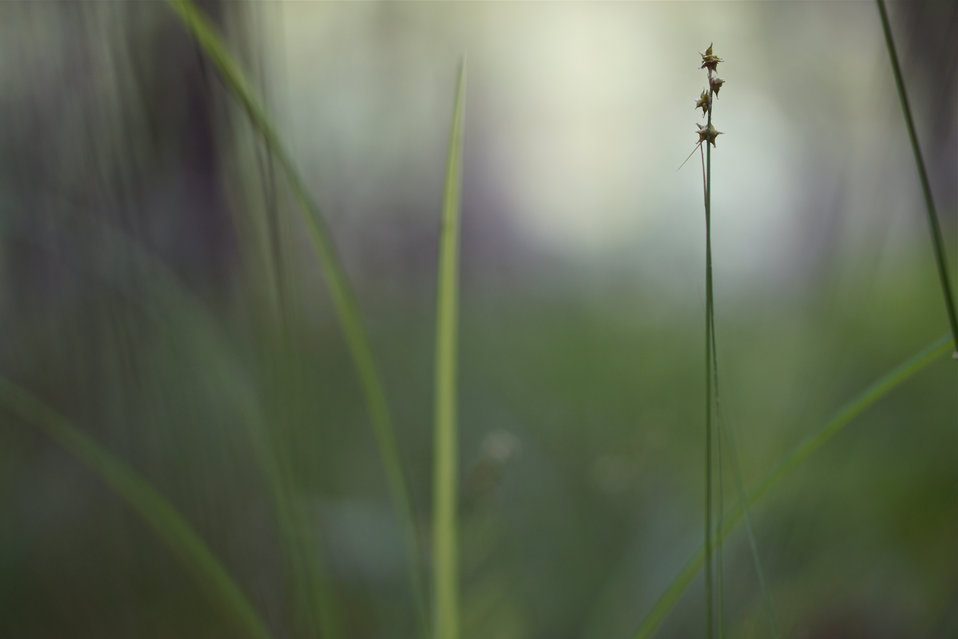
Lone sedge seedhead

In May, bog conservationists from Tennessee, North Carolina, and Georgia convened in the north Georgia mountains for the spring, 2014 meeting of the Bog Learning Network. The event provided an opportunity for biologists to see, first hand, the result of management efforts at two north Georgia bogs. More importantly, the outings provided an opportunity to share innovative approaches to bog management, such as the role of the Georgia Plant Conservation Alliance in conserving rare plants and coordinating a cadre of volunteers to work on bog management.

The Bog Learning Network was convened in the winter of 2013 as a way to bring together people working for bog conservation across the Southern Appalachians. Southern Appalachian bogs are one of North America’s rarest habitats and home to many rare plants and animals.